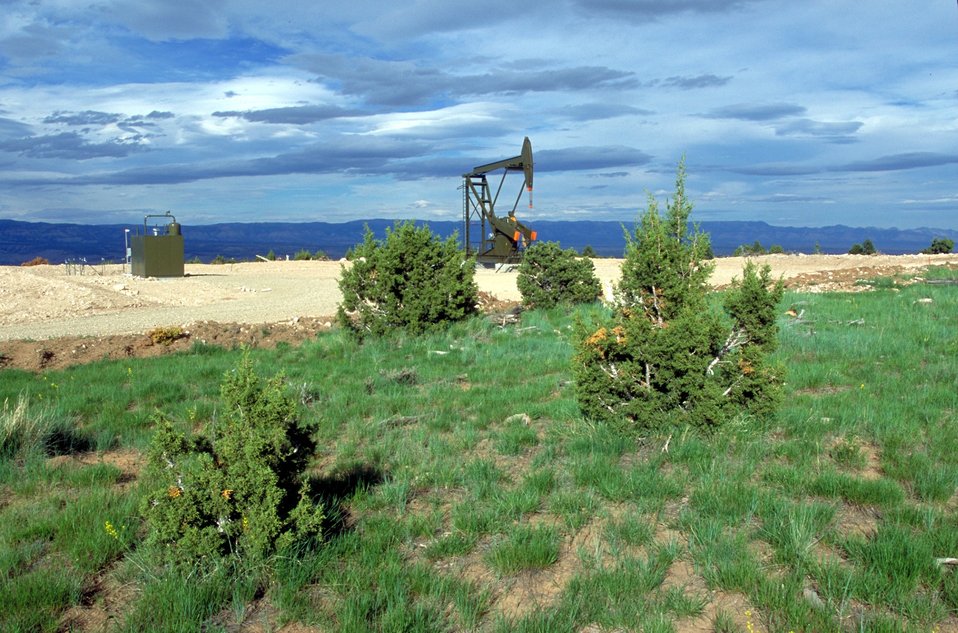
Pump unit producing coal bed methane near Price, Utah.